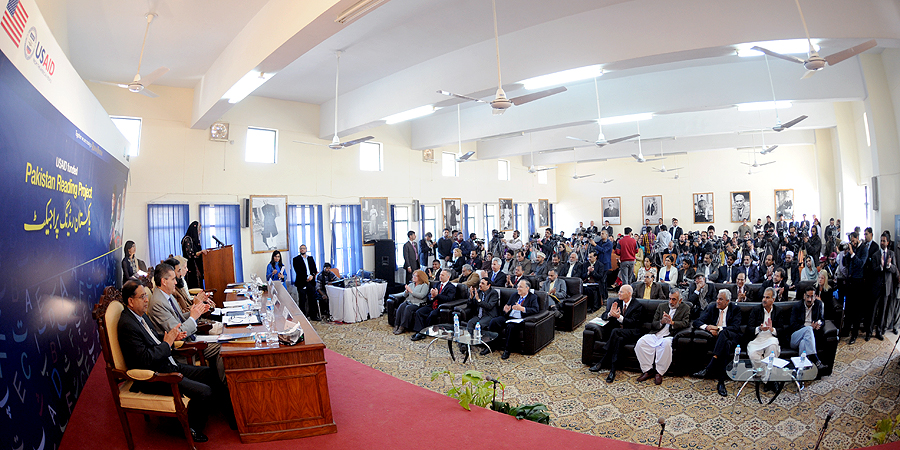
United States and Pakistan Launch the Pakistan Reading Project